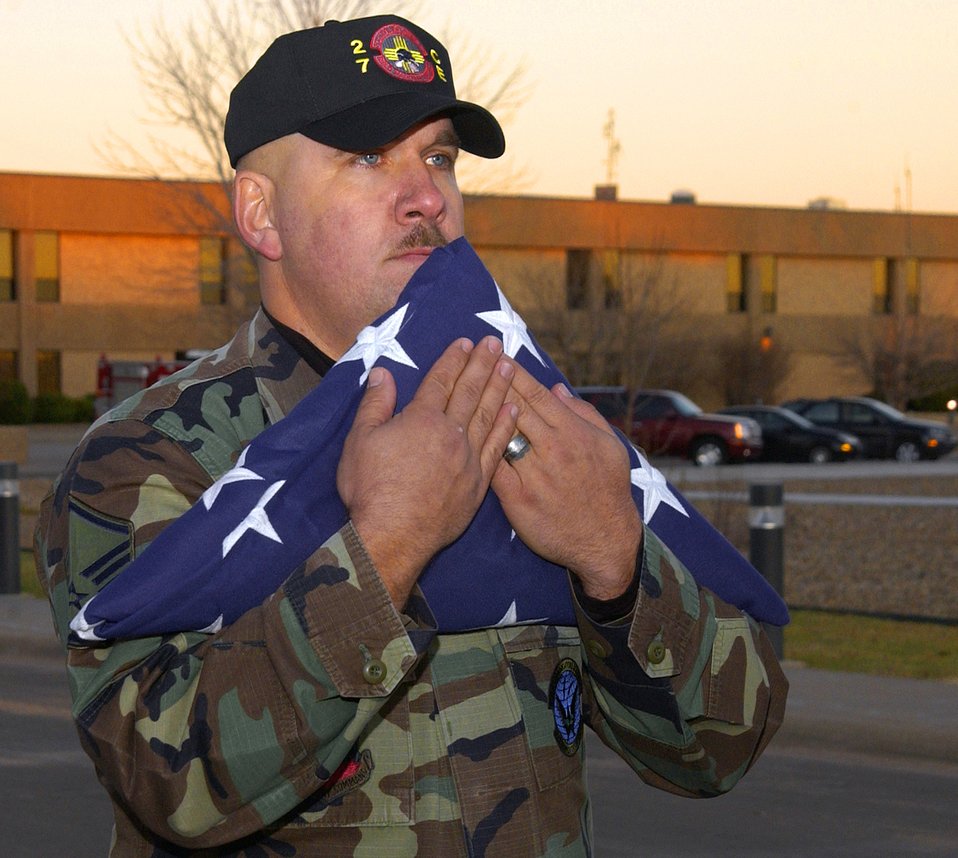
Honoring fallen comrade

Honor guard member Master Sgt. Eric Butt cradles the flag flown in honor of Capt. Kermit Evans, after a special retreat ceremony Dec. 6 at Cannon Air Force Base, N.M. Captain Evans was killed in an emergency helicopter landing Dec. 3 near the shore of Lake Qadisiyah in western Al Anbar Province, Iraq. He was one of 16 people aboard the Marine CH-46 helicopter and one of four servicemembers killed as a result of the landing. Captain Evans was the commander of the 27th Civil Engineer Squadron's Explosives Ordnance Disposal Flight. The flag will be placed in a shadow box for his wife, Perneatha, and 13-month-old son, Kermit Jr.